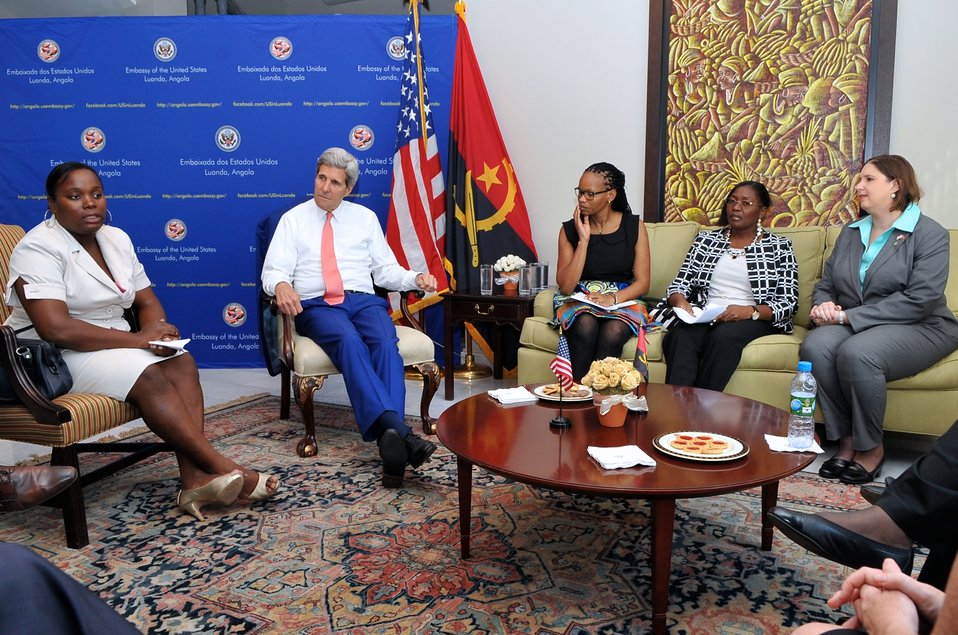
Secretary Kerry, Charge Merritt Listen to Angolan Civil Society Members

U.S. Secretary of State John Kerry and Charge d'Affaires Heather Merritt at Embassy Luanda listen to comments by a member of Angolan civil society during a meeting with them in Luanda on May 4, 2014.